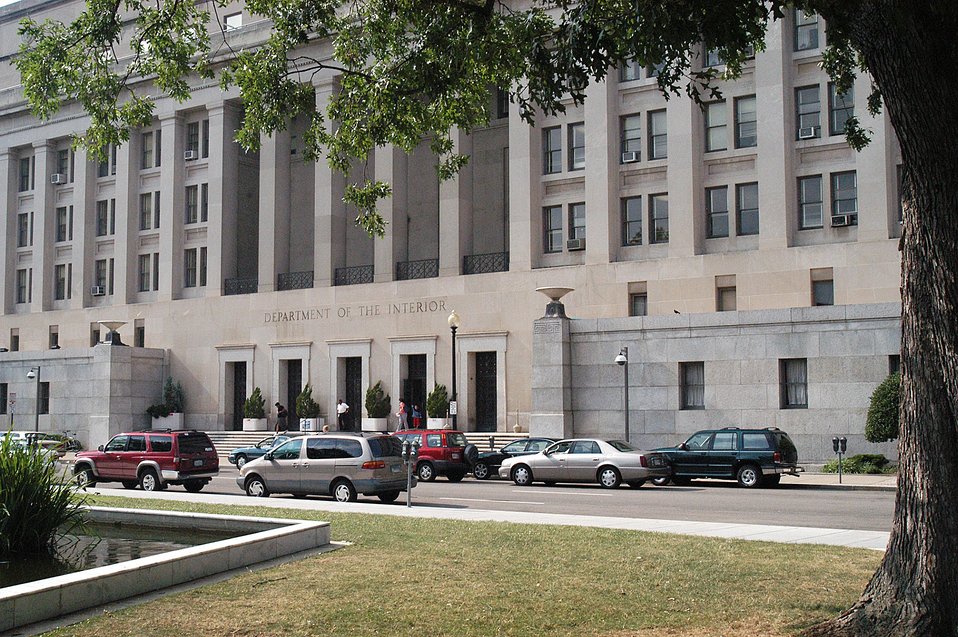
Department of the Interior building in Washington DC on 1849 C Street N.W. Photo by Tom Iraci, July 2004.